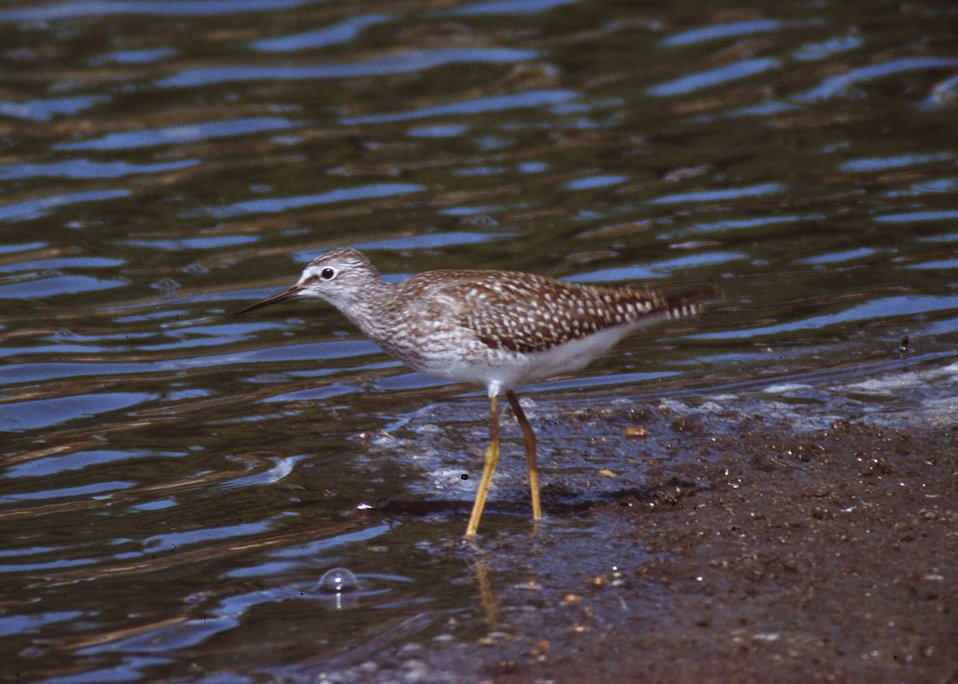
Lesser yellow legs along a shoreline in South Dakota.